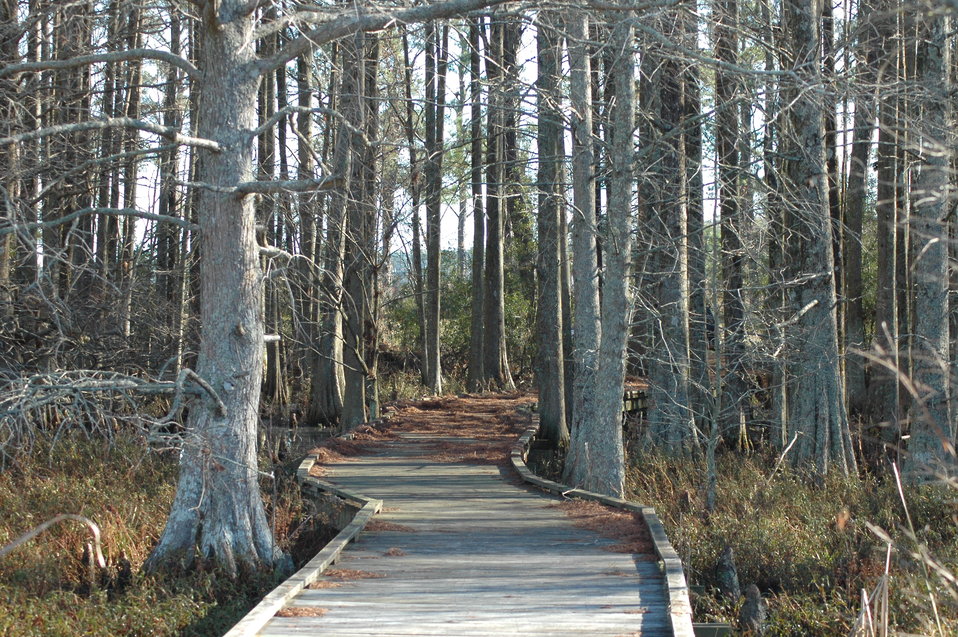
New Holland Trail 1

At Mattamuskeet National Wildlife Refuge.